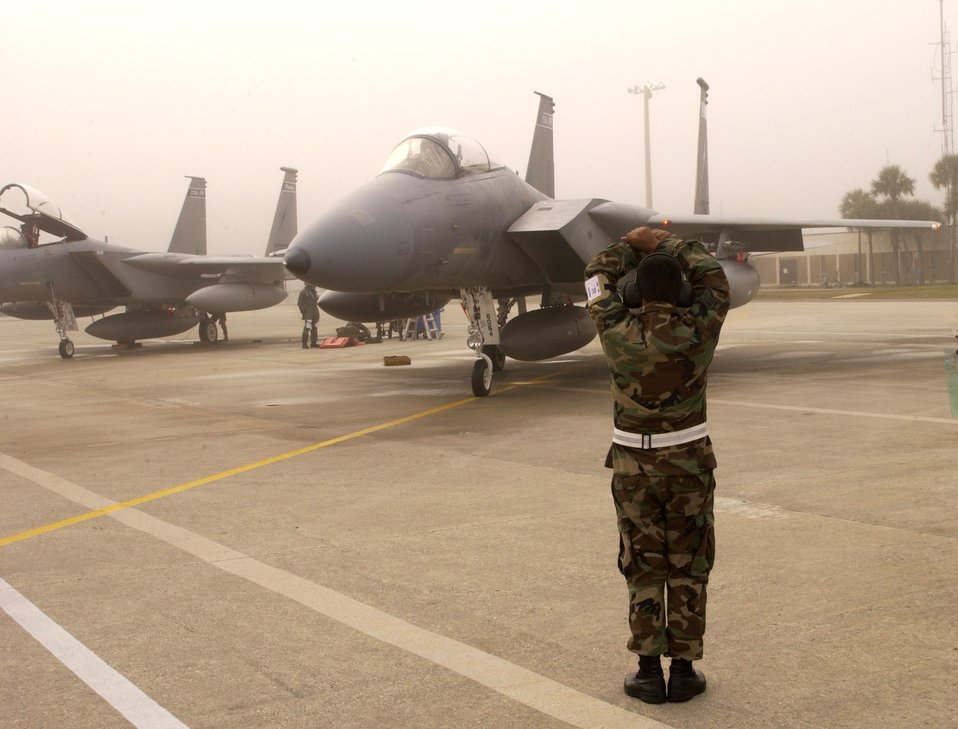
Flight preparation

JACKSONVILLE AIR NATIONAL GUARD BASE, Fla. (AFPN) -- Staff Sgt. Ever Garay signals his aircraft for the morning launch in support of an operational readiness exercise here Jan. 22. Sergeant Garay is with the 125th Fighter Wing. The wing is participating in an operational readiness exercise to help ensure the unit is capable of deploying personnel and equipment safely and efficiently.